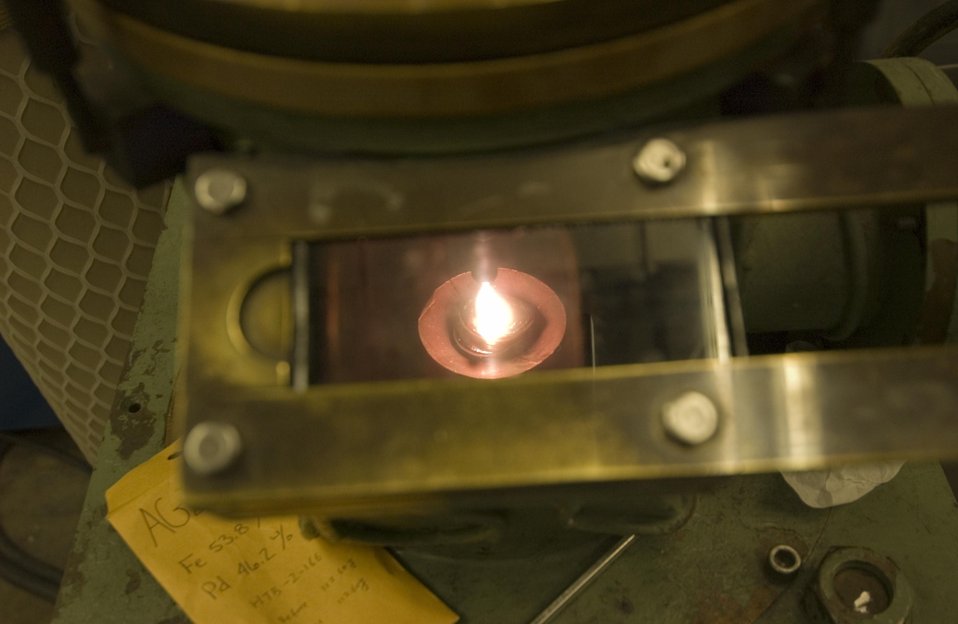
An alloy button is melted in an arc melter.

The Plasma Lab furnace generates temperatures well in excess of 10,000 degrees celsius. The furnace can melt reactive metals and alloys without the need for crucibles to contain them, thus eliminating possible contamination from crucible materials.